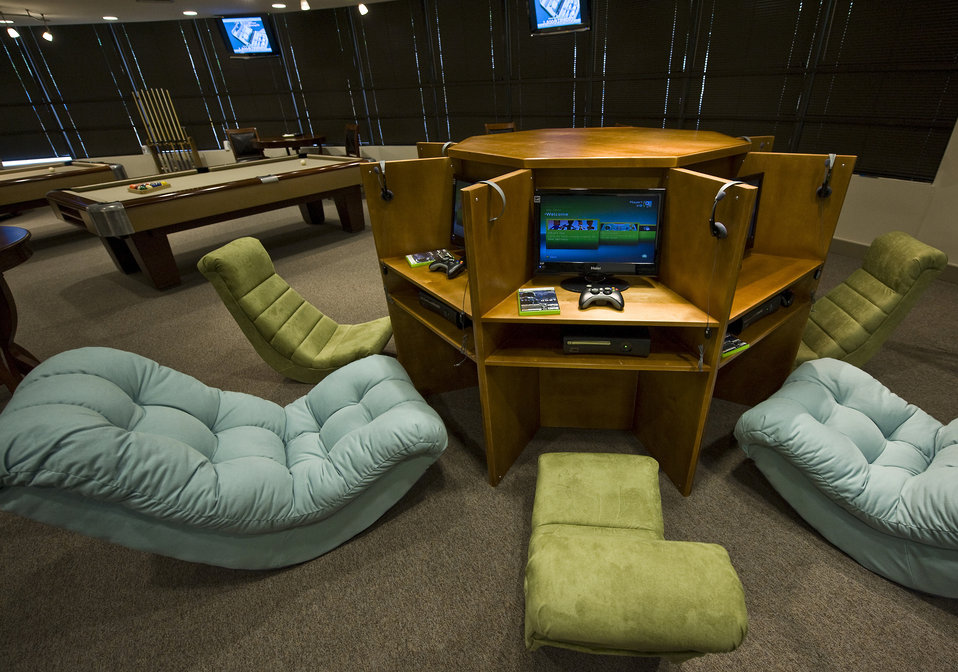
USO reopening in San Antonio

The USO San Antonio River Center is now equipped with an eight person Xbox 360 battle station for multi-person gaming, two newly refurbished pool tables and four personal gaming rooms with Nintendo Wii systems.